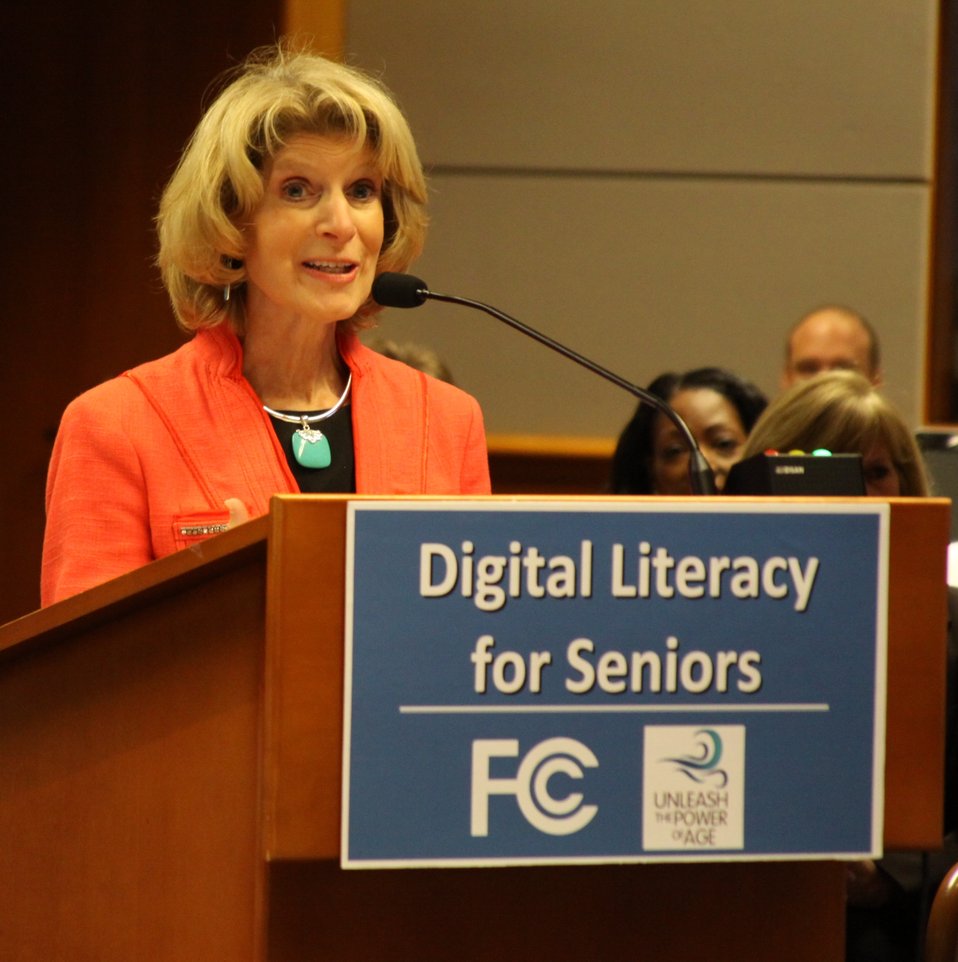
Debra Berlyn, Executive Director, The Project to Get Older Adults onLine (GOAL): Digital Literacy for Seniors: How the Internet Can Benefit Older Americans, April 24, 2013